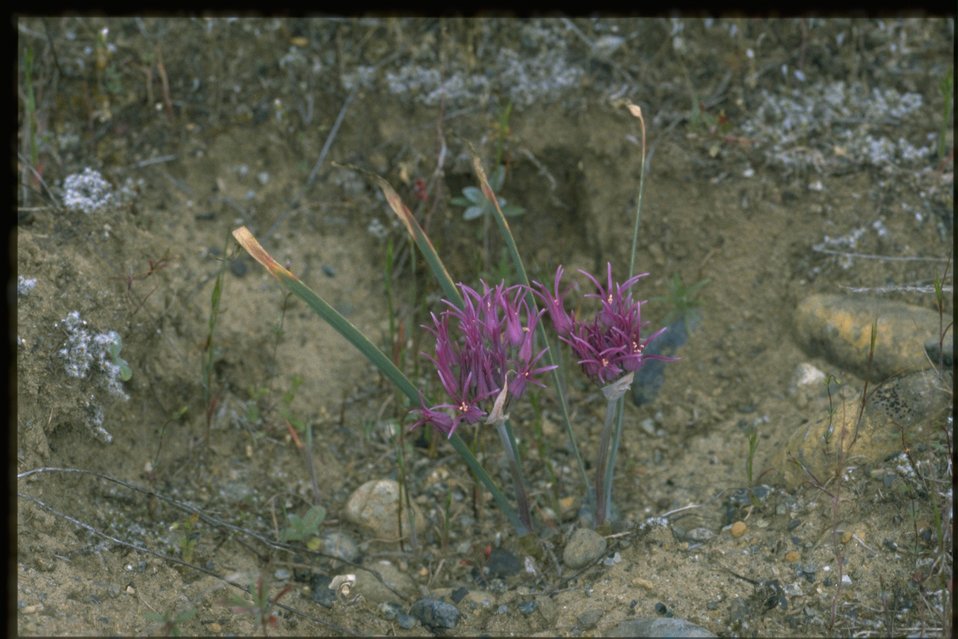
Medium shot of Allium falcifolium.